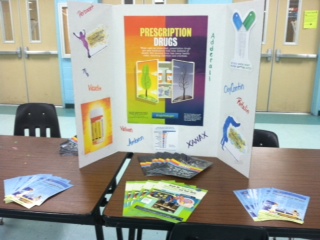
NDFW in Philadelphia, PA

2013 NDFW display by Shalom at Neumann Goretti H.S., NDFW in Philadelphia, PA.